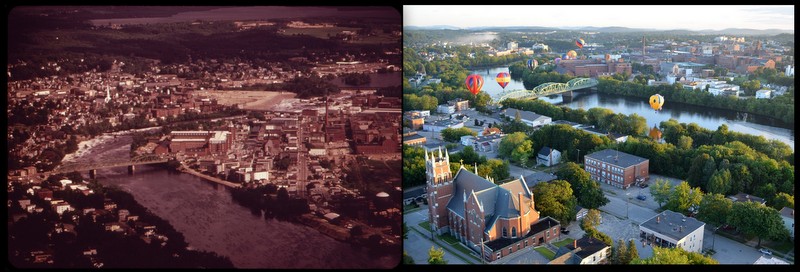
Lewiston-Auburn, ME 1973 and 2012

'Then' Documerica Photo: June, 1973 The Androscoggin River Flows between Lewiston (Eastern Shore) and Auburn (Western Shore). Lewiston Is the State's Foremost Textile Center by Charles Steinhacker.

'Now' State of the Environment Photo: October, 2012 Photo by Munroe Graham.

Join in at www.flickr.com/groups/ourenvironment